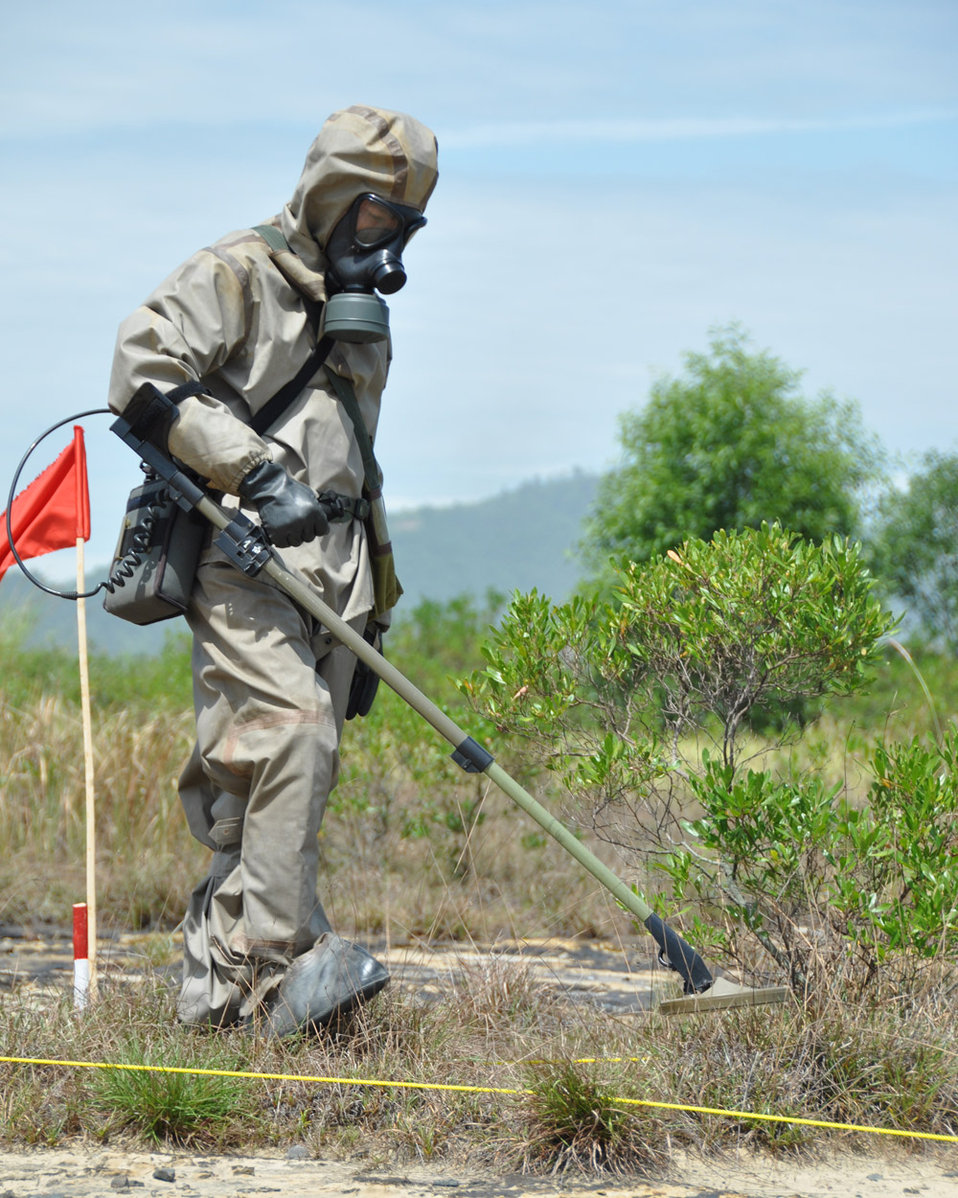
A Vietnamese soldier demonstrates UXO detection and clearance in Danang. June 17, 2011